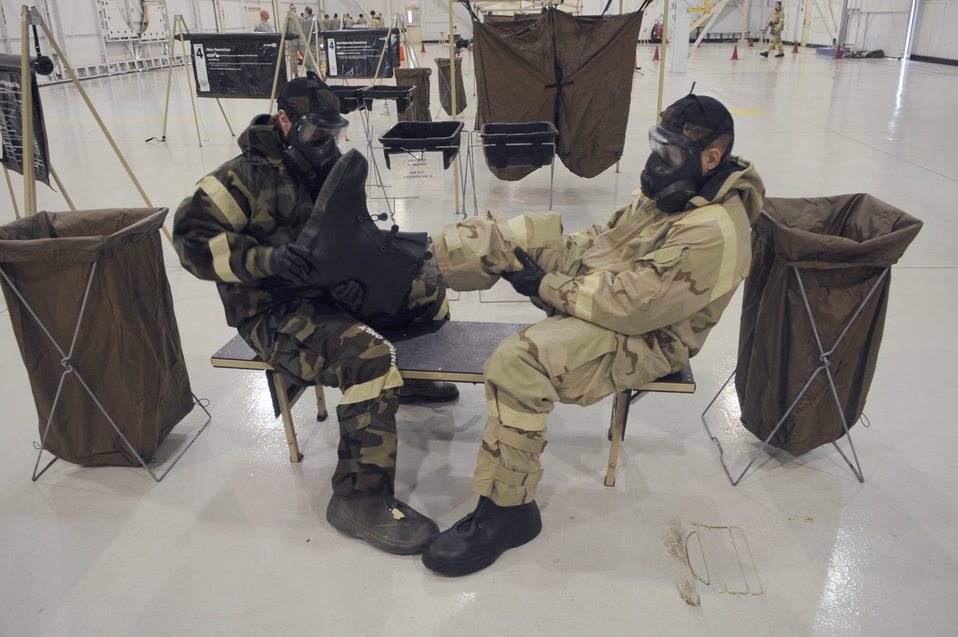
ATSO rodeo prepares Airmen for exercises, deployments

Airman Sabrina Crawford and Staff Sgt. Troy Zimmerman assist each other in the removal of simulated contaminated gear Dec. 13, 2010, at Mountain Home Air Force Base, Idaho, during an ability to survive and operate rodeo. Airman Crawford is assigned to the 366th Medical Group, and Sergeant Zimmerman is assigned to the 366th Civil Engineer Squadron.